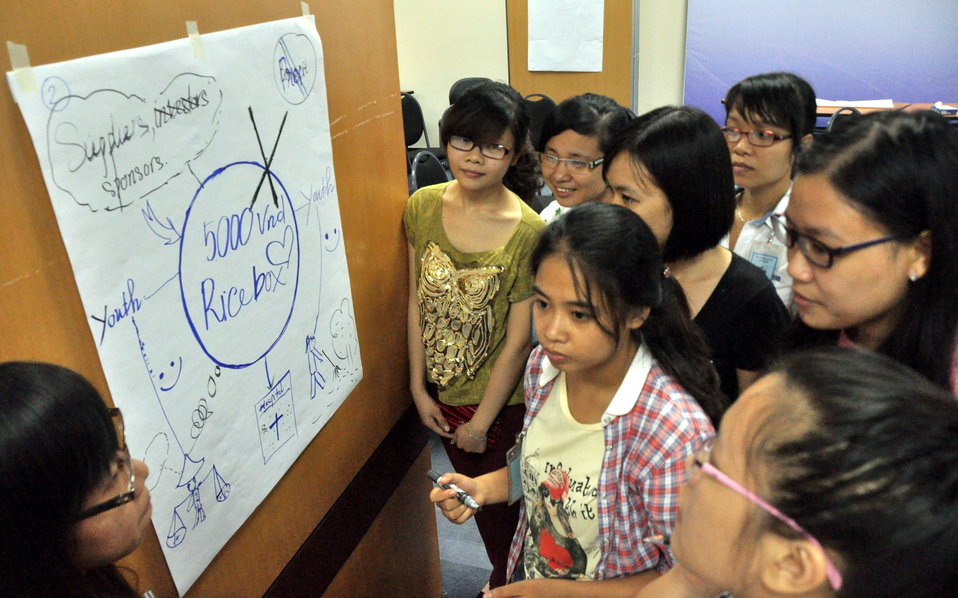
International Youth Day 2013: USAID hosts a lively discussion and group exercise on how youth can join in to advance development

Hanoi, August 12, 2013.